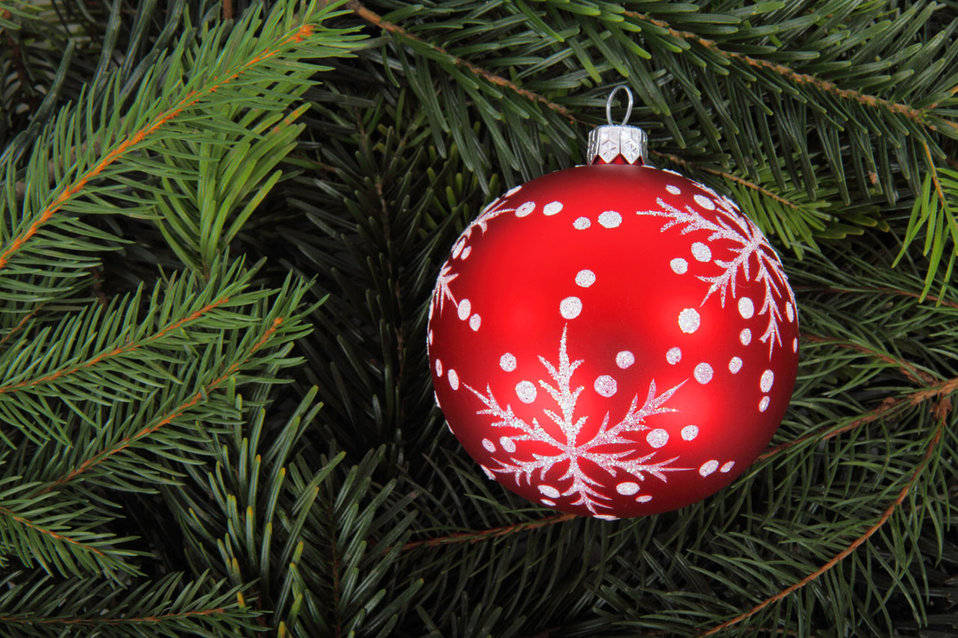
Red bauble on tree branches

Red christmas bauble on green tree branches.